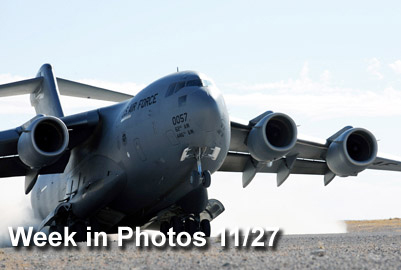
Week in Photos 11/27

Air Force Week in Photos for Nov. 27 highlights photos from around the Air Force. In this photo by Airman 1st Class Brett Clashman, a C-17 Globemaster III takes off recently at an airfield on the Nevada Test and Training Range near Nellis Air Force Base during the Mobility Air Forces Exercise.